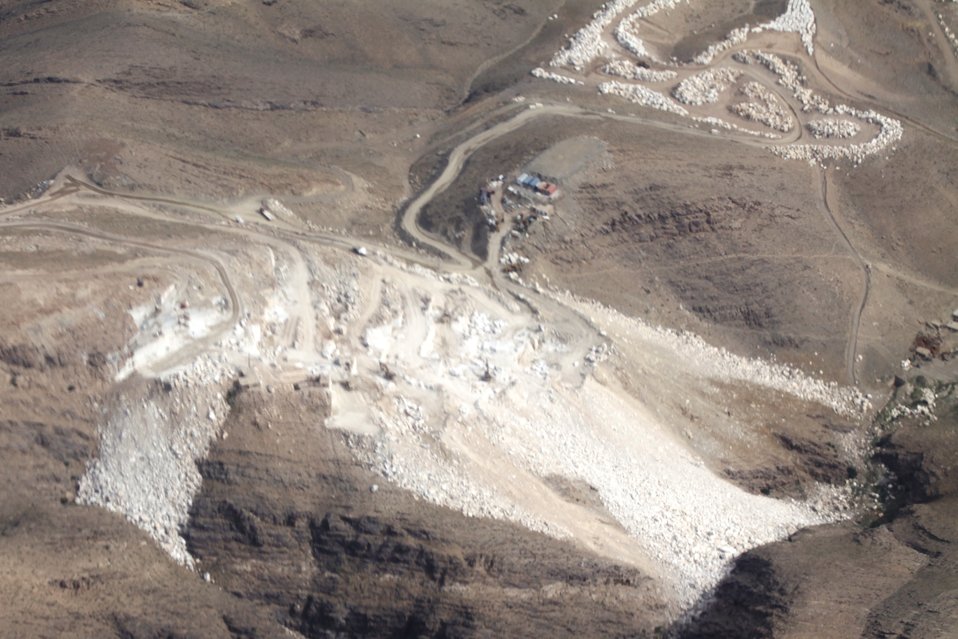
100525 Hirat Marble Conference 027